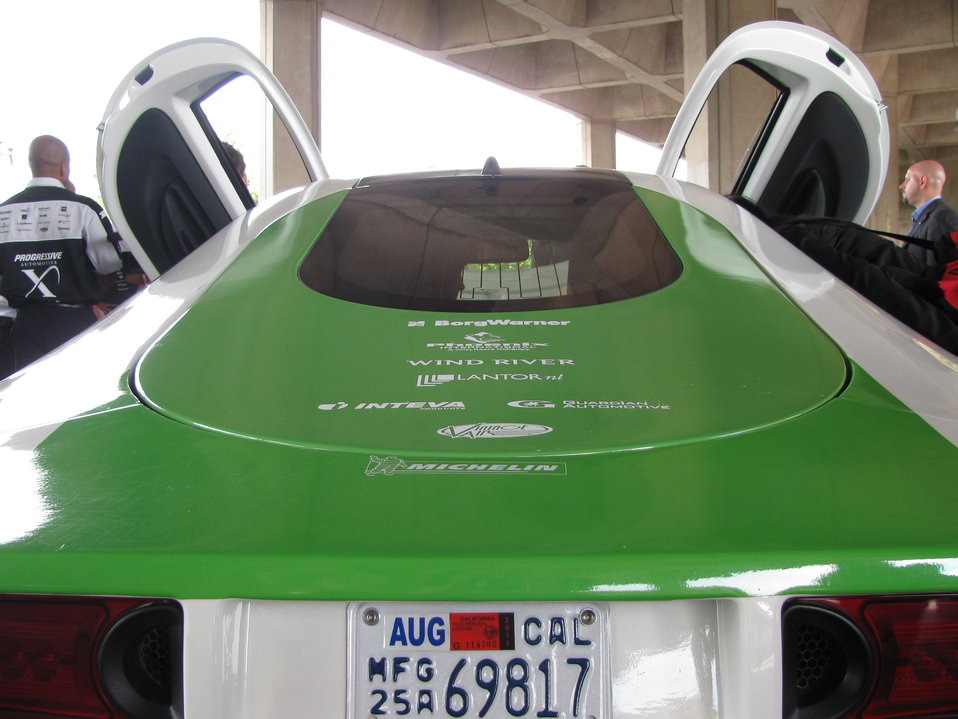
X Prize 066